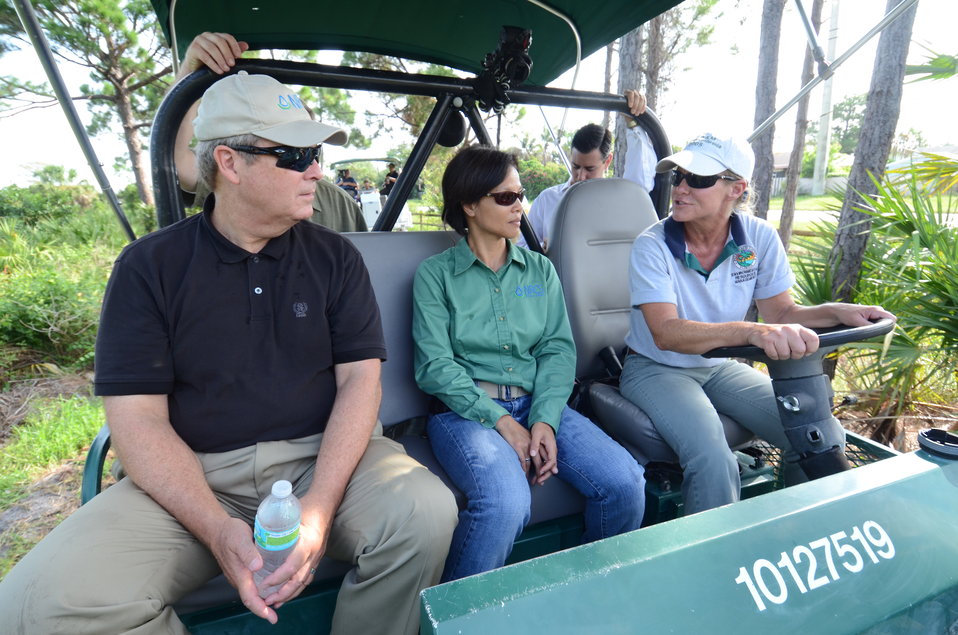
Agriculture Secretary Tom Vilsack rides along with USDA, National Resources Conservation Service Nga Watts and Palm Beach County Board of County Commissioners, Department of Environmental Resource Management, Natural Resources Stewardship Environmental Program Supervisor Brenda Hovde (driving) to see the Winding Waters Natural Area.